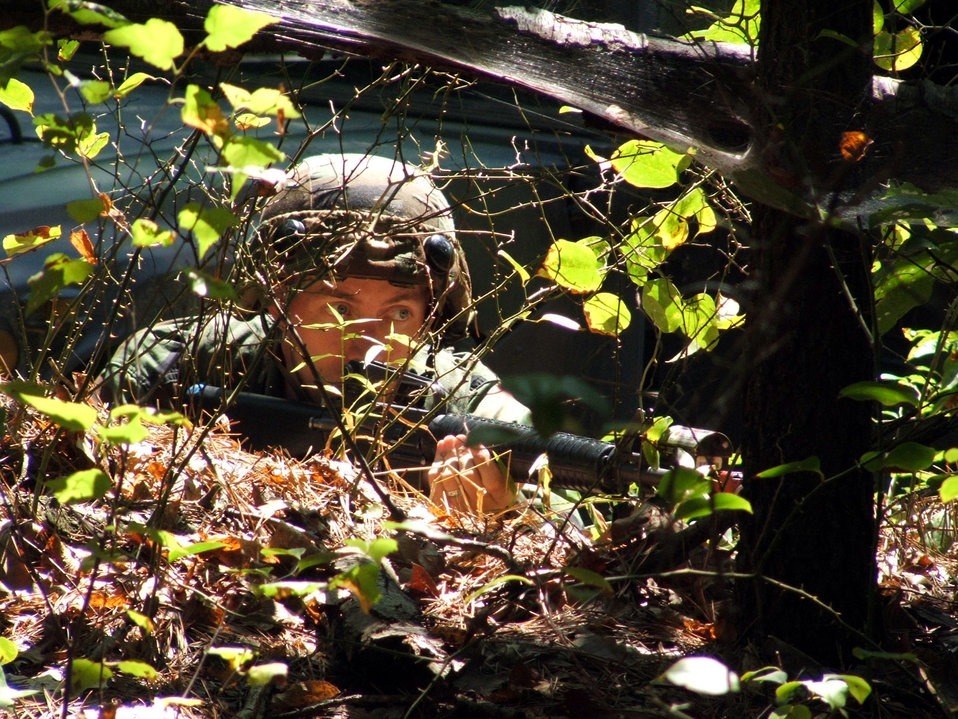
'Deployed' to New Jersey

FORT DIX, N.J. -- Capt. Davis Birch takes cover behind an embankment during convoy training as part of the contingency skills training course here. Captain Birch trained to prepare for an upcoming deployment.